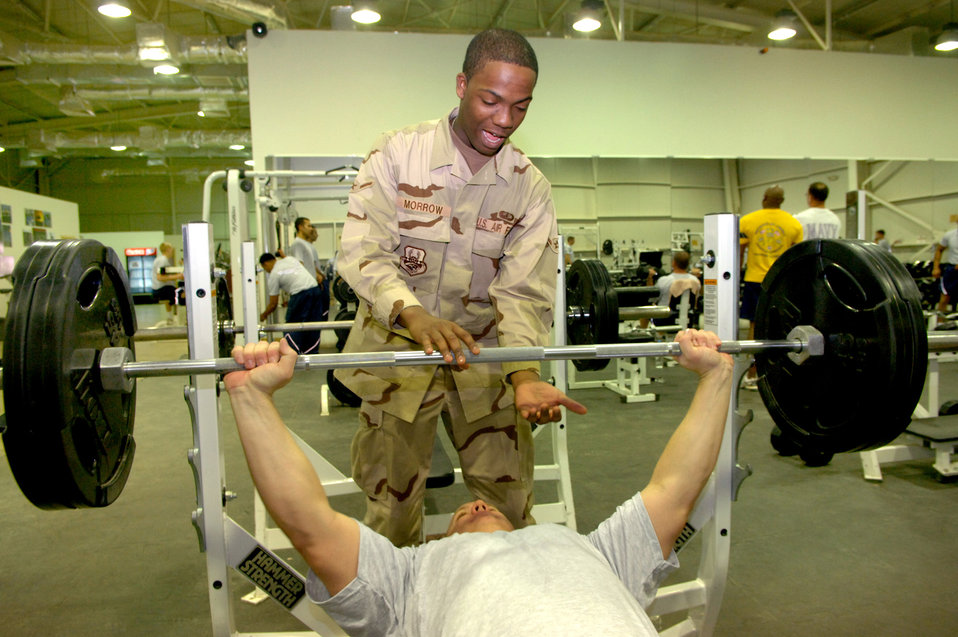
Services Airmen keep morale high in Iraq

Airman Aaron Morrow spots a fellow Airman on the bench press at the base fitness center. Airman Morrow is a certified fitness trainer deployed from the 366th Services Squadron at Mountain Home AFB, Idaho to the 332nd Expeditionary Services Squadron, Balad AB, Iraq.